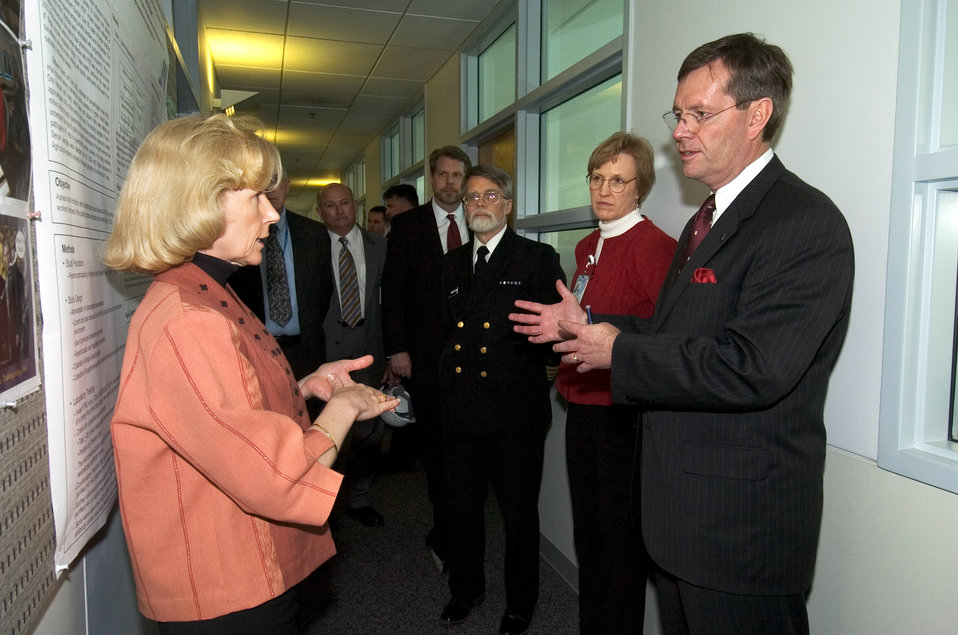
This 2005 photograph was taken during Michael O. Leavitt's first trip to the CDC while in his newly appointed role as Secretary of Health and Human Services. Here Mr. Leavitt was being briefed by CDC's Dr. Nancy Cox (left).